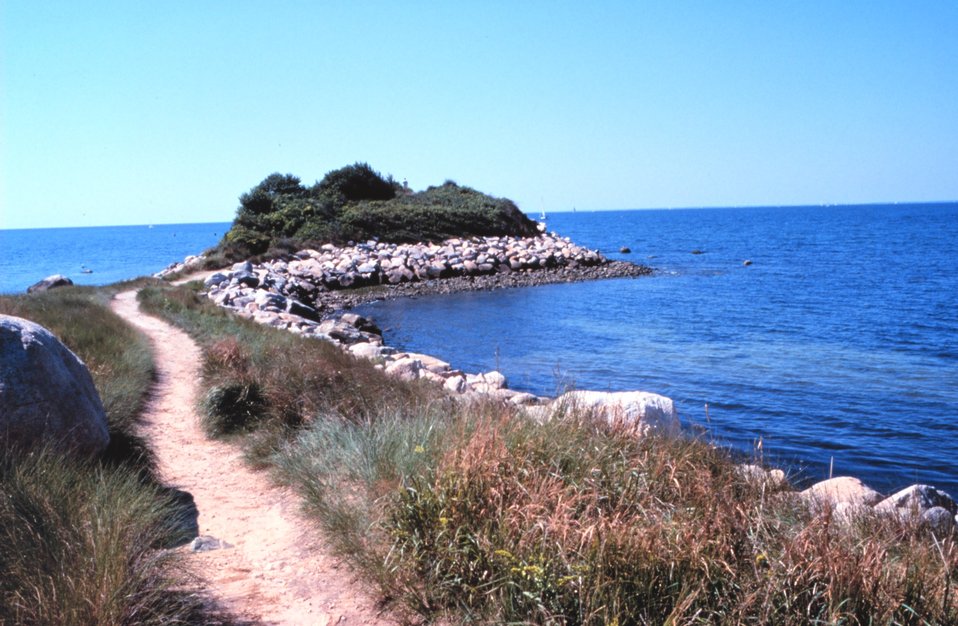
The Knob, Woods Hole